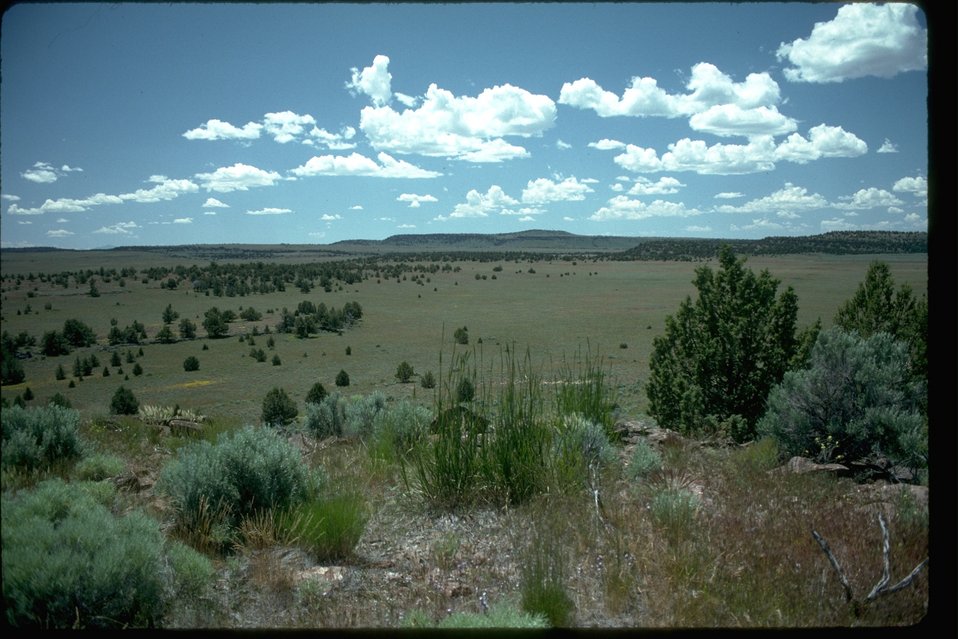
Scenic picture of high desert terrain northwest of Frenchglen, Oregon, near Fish Lake.